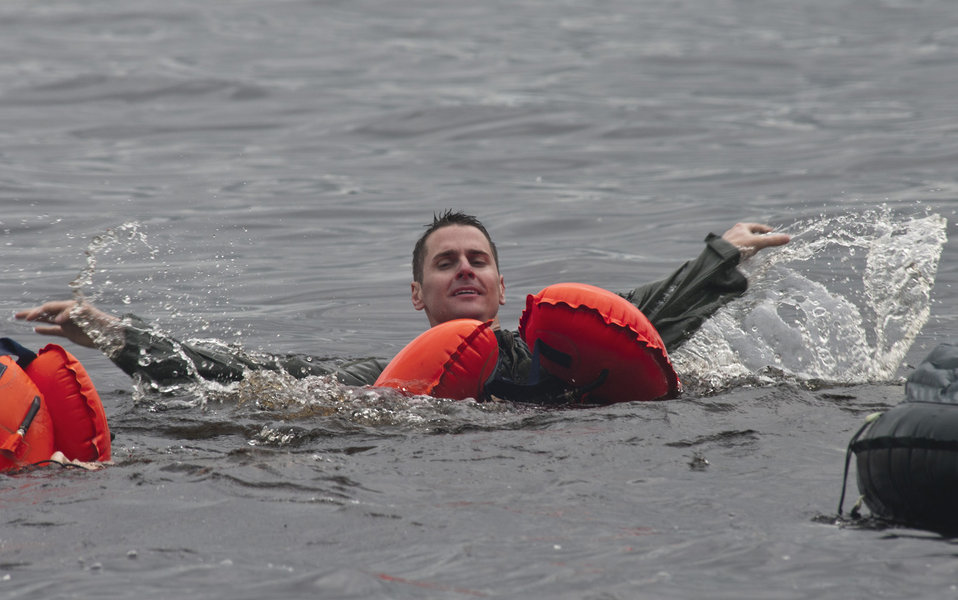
Water survival training

1st Lt. Christopher Smith swims while using a life preserver June 11, 2011, during aircrew survival training in the St. Croix River near Hastings, Minn. Lieutenant Smith is assigned to the Minnesota Air National Guard's 133rd Airlift Wing.